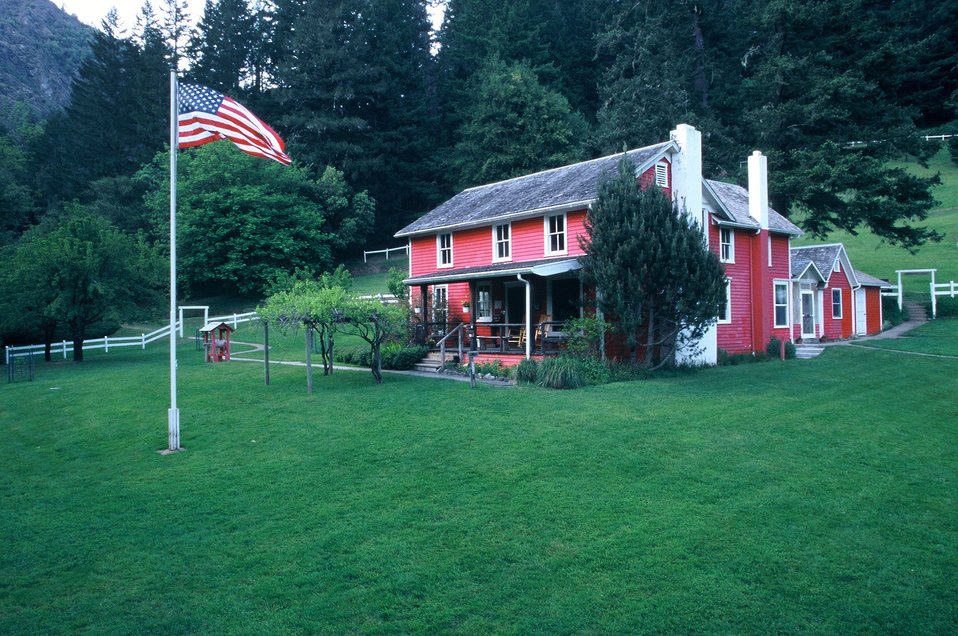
Wild section of the Rogue River from Grave Creek to Foster Bar May 19 to May 22.